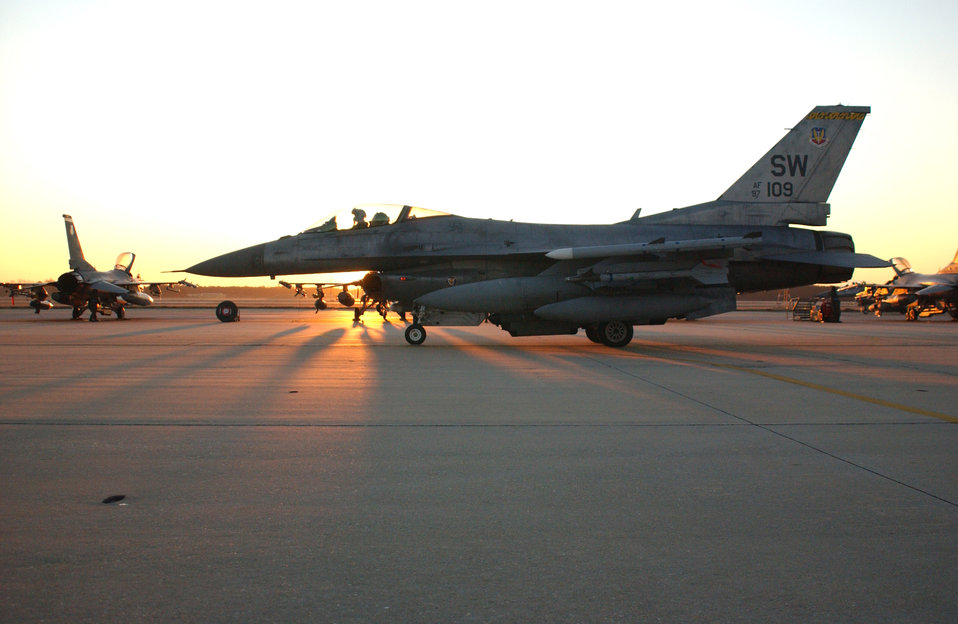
Exercising Falcons

An F-16 Fighting Falcon assigned to the 20th Fighter Wing taxies in preparation to launch in support of Operational Readiness Exercise Sea Lion 07-03 Jan. 26 at Shaw Air Force Base, S.C. Exercises prepare Airmen for future deployments.